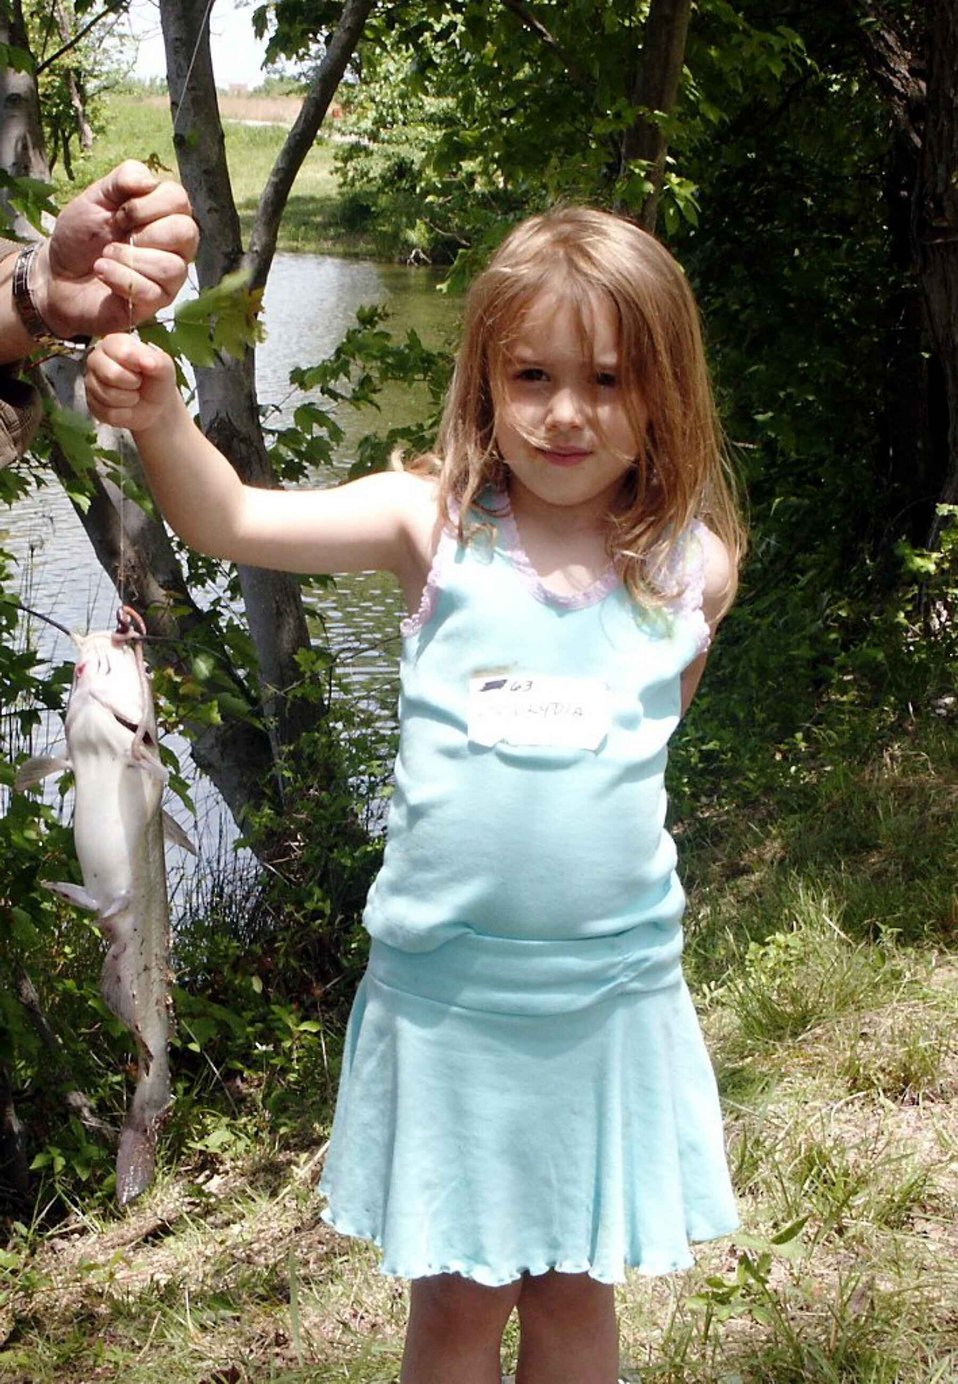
English:
Image title: Cute little girl fishing Image from Public domain images website, http://www.public-domain-image.com/full-image/people-public-domain-images-pictures/children-kids-public-domain-images-pictures/cute-little-girl-fishing.jpg.html